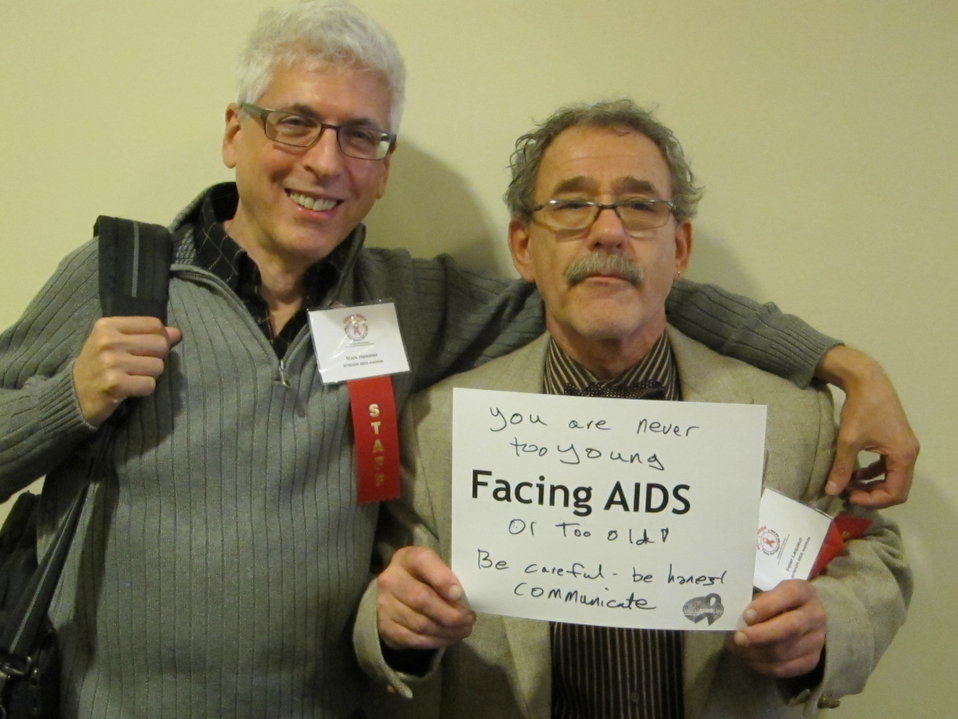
You are never too young - Facing AIDS - or too old! Be careful. Be honest. Communicate.